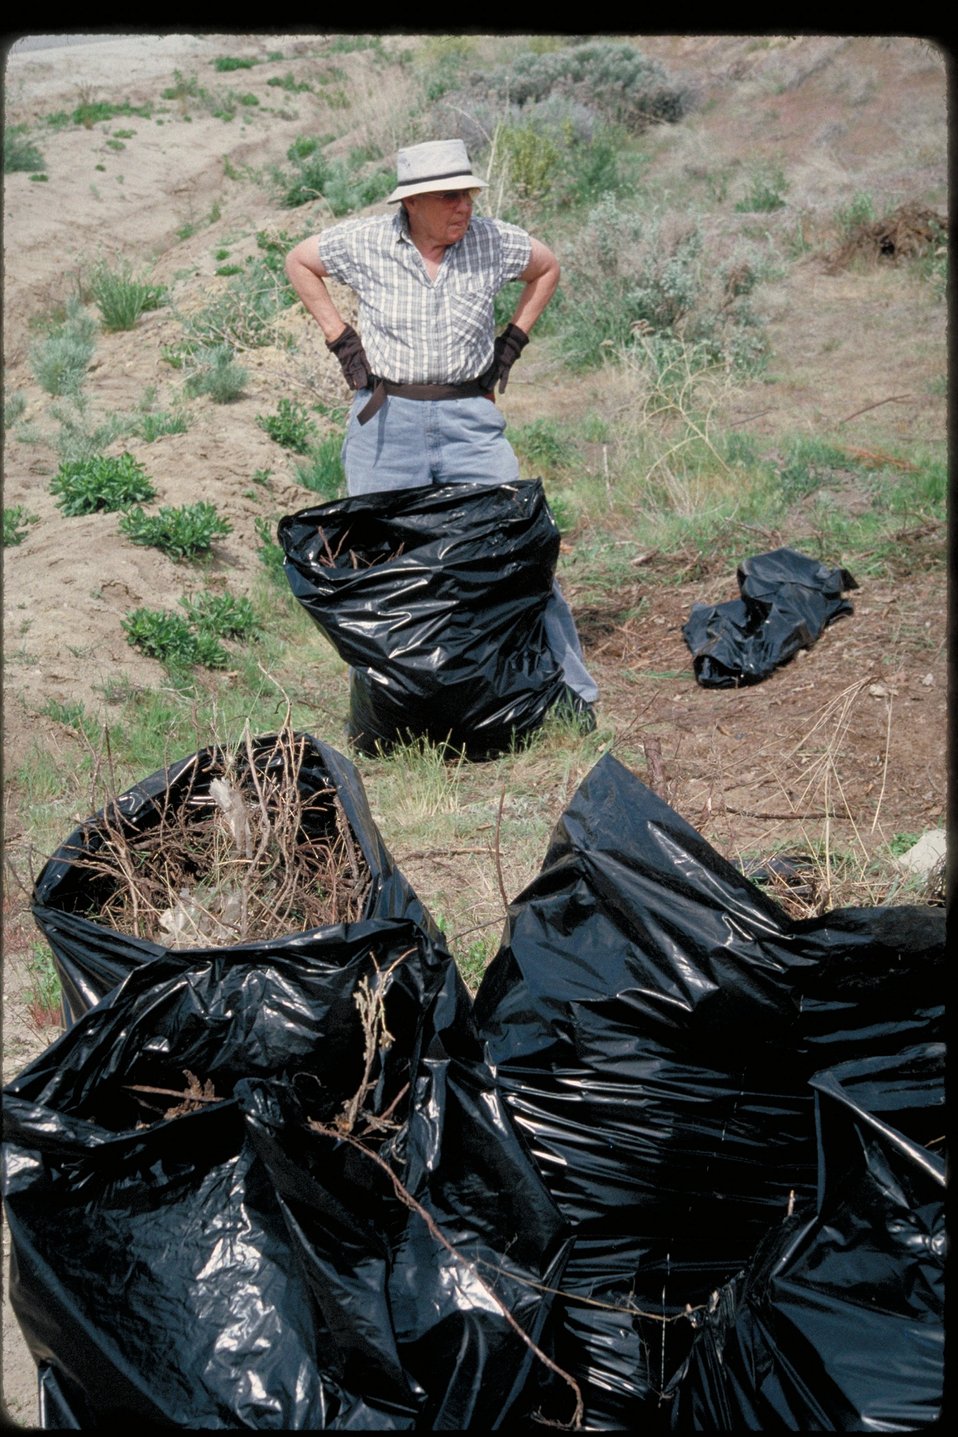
Boise Front Four Rivers Field Office LSRD Lower Snake River District